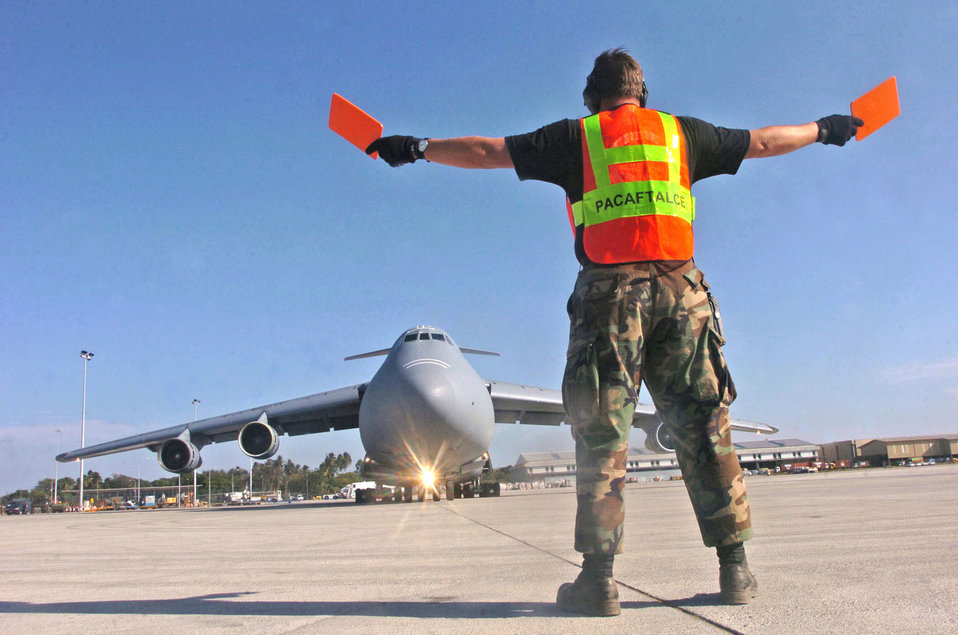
A Galaxy far, far away

BANDANAIKE, Sri Lanka -- Master Sgt. Jeff Wisley marshals a C-5 Galaxy aircraft that landed at the international airport here supporting Operation Unified Assistance. U.S. servicemembers are helping bring relief supplies and equipment to various locations in Sri Lanka. Sergeant Wisley is assigned to the Pacific Air Forces' tanker airlift control element at Yokota Air Base, Japan. The aircraft is assigned to the 60th Airlift Wing at Travis Air Force Base, Calif.